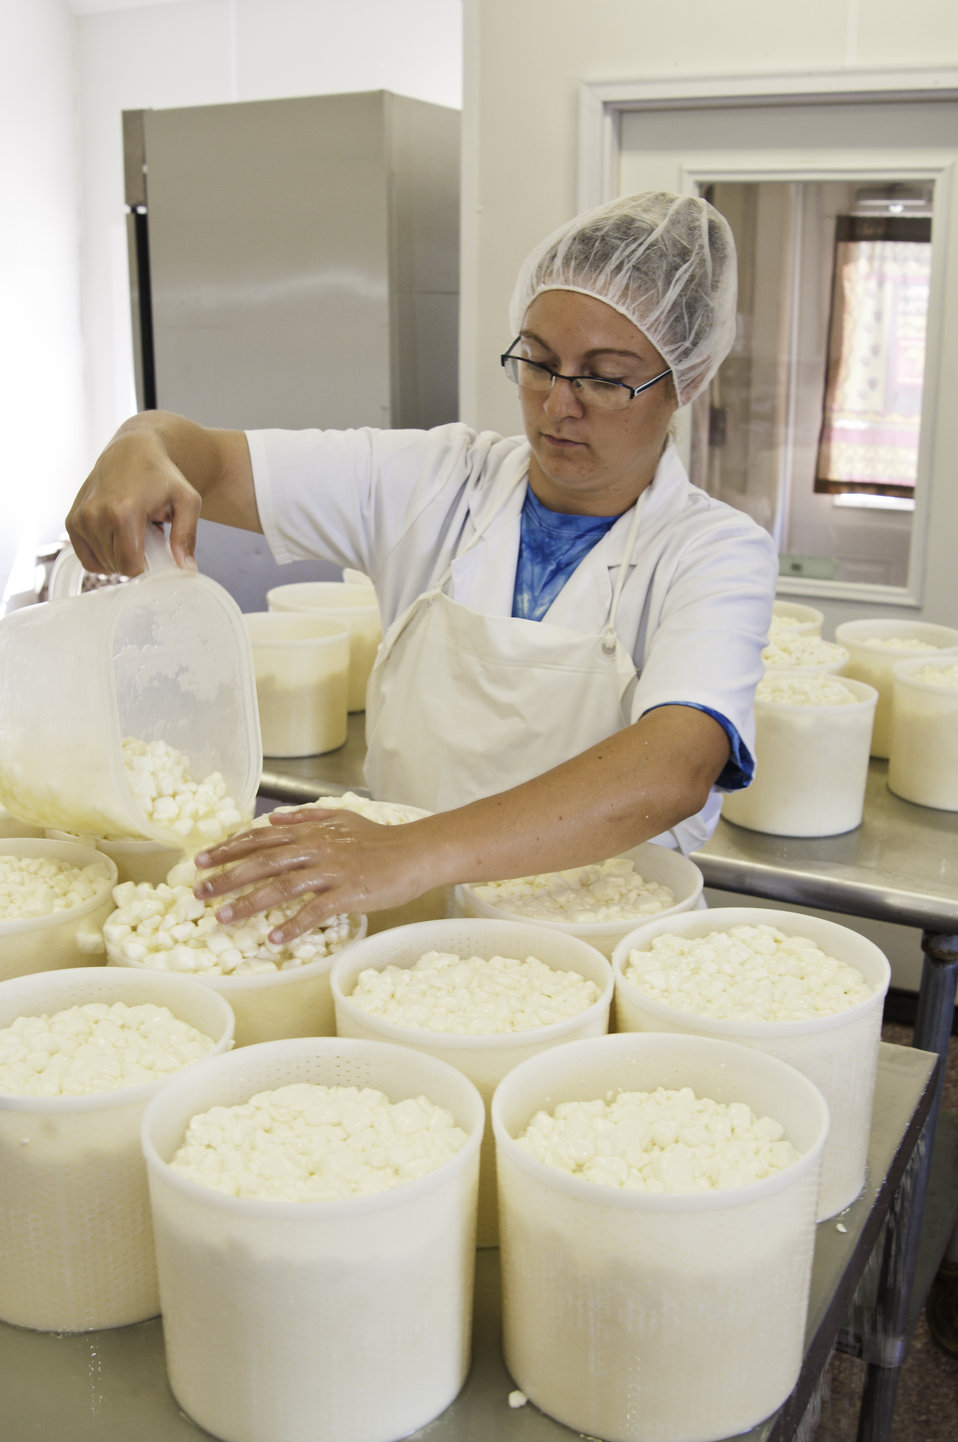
Chapel’s Country Creamery farm manager Courtney Biggs in Easton, MD pours milk curd of fresh raw milk after the milk curd has expelled the whey in the cutting process into cheese hoops called the hooping process. The curds drain in the cheese hoops for 24 hours being turned during the process until the whey has drained. Then the cheese is taken to the aging room to cure. The dairy uses fresh raw milk 12-24 hours old. The milk is all-natural and contains no synthetic hormones, antibiotics, or chemical compounds. The 1150 pounds of milk in the vat will be used to make the dairy’s “Bay Blue” Cheese.